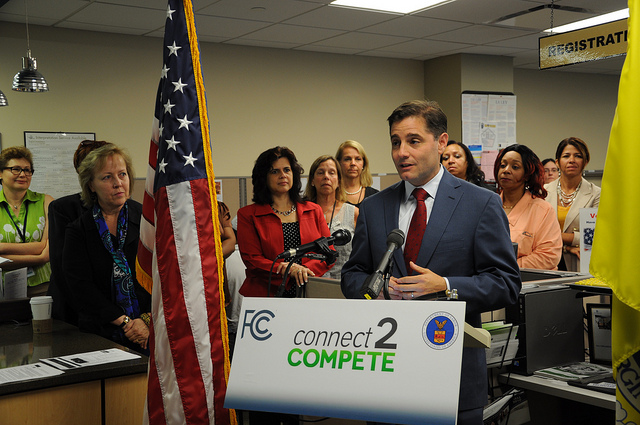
Connect to Compete 7.16.12

FCC Chairman Julius Genachowski announcing the partnership between the FCC and DOL to promote digital literacy for workers.